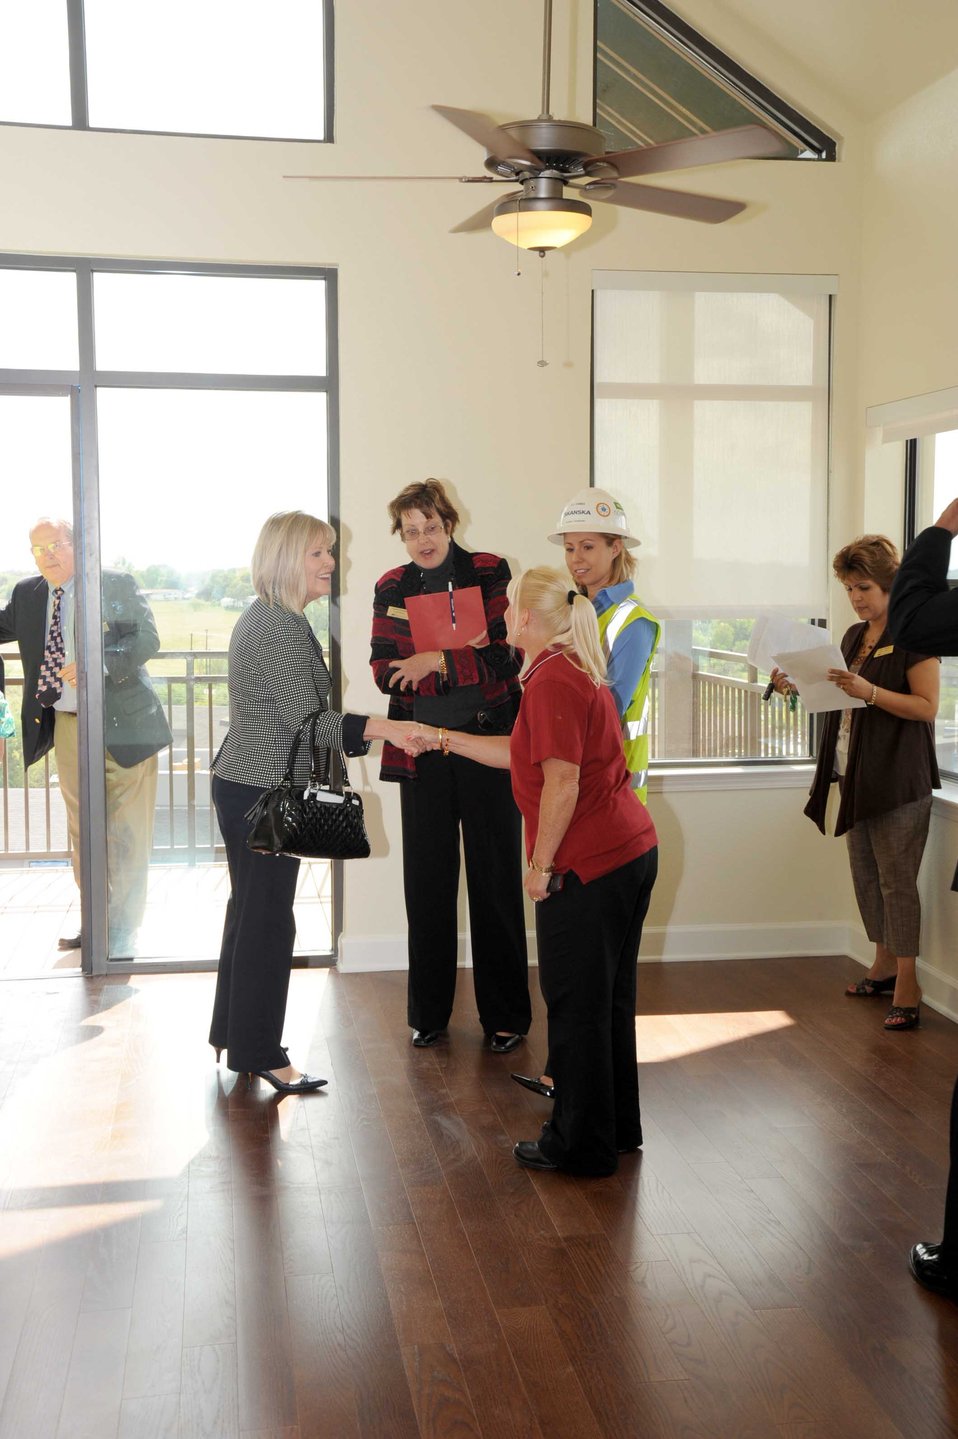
Air Force Village rededicated during special ceremony

Suzie Schwartz meets with (left to right) Kathleen Estrada, executive director of Air Force Village I; Audra Tiemann, project engineer for Skanska; and Debbie Zazeela, fitness manager for AF Village, Oct. 22, 2010, for a tour of the newly refurbished Air Force Village I in San Antonio. Mrs. Schwartz, the wife of Air Force Chief of Staff Gen. Norton Schwartz, helped rededicate Air Force Village I later in the day.